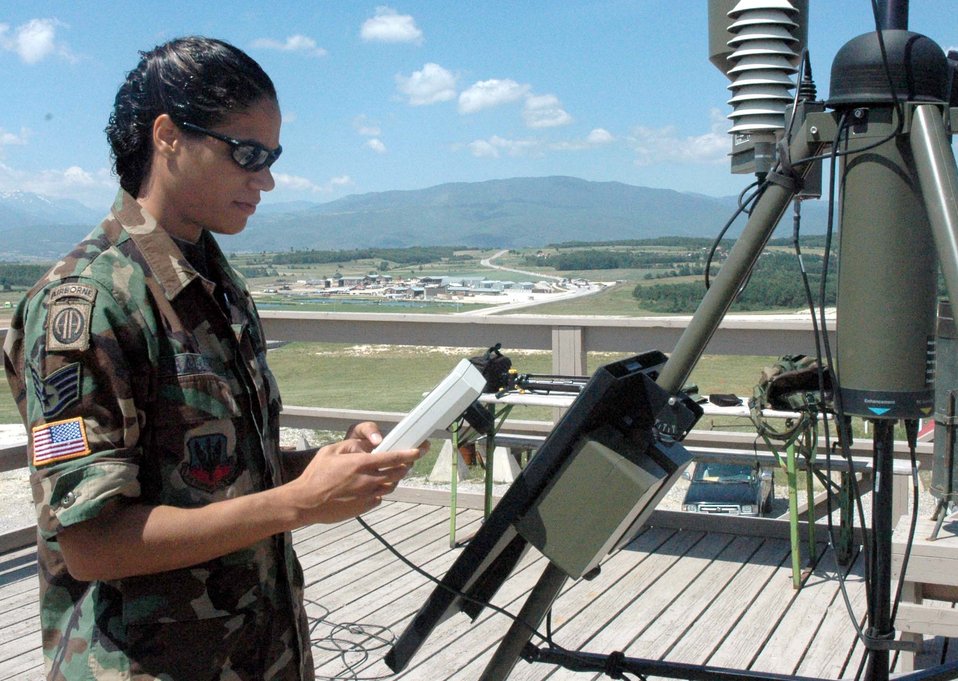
Weather forecasters provide support in Kosovo

PRISTINA, Serbia and Montenegro -- Staff Sgt. Patricia Ballou reads weather data from tactical weather equipment that aids in remote weather forecasting observations here. Sergeant Ballou is a weather forecaster deployed to Camp Bondsteel in Kosovo supporting Operation Joint Guardian. She is deployed from the California Air National Guard's 195th Weather Flight.